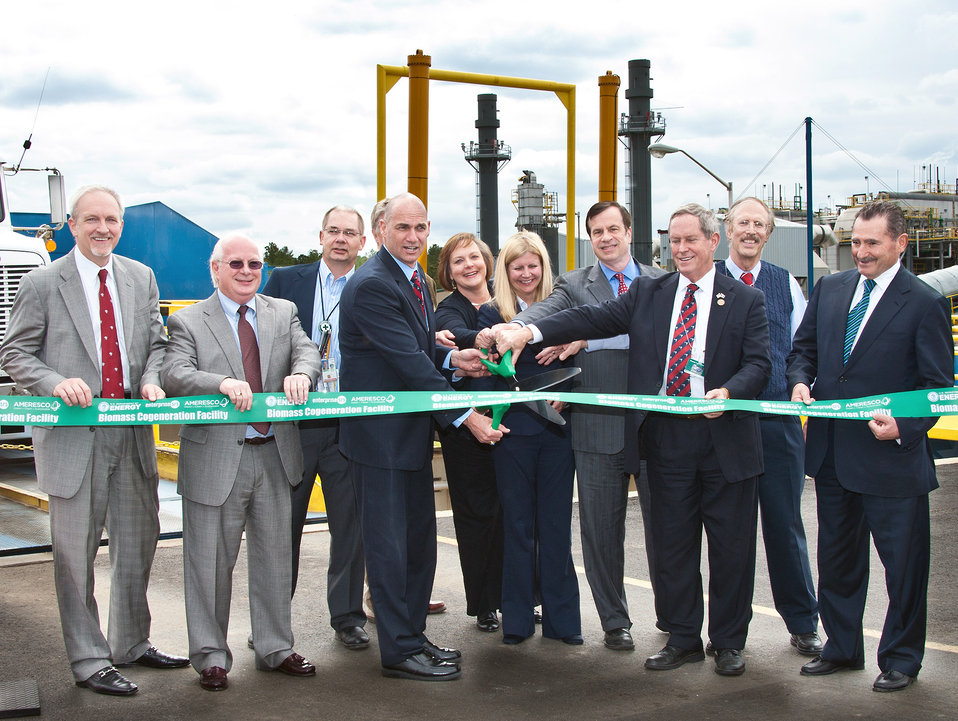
EM Celebrates Ribbon Cutting for New Biomass Plant at Savannah River Site

In 2009, DOE competitively awarded Ameresco Federal Solutions, Inc. a fixed-price renewable Energy Savings Performance Contract (ESPC) to finance, design, construct, operate, maintain and fuel a new biomass facility at SRS for 20-years. Under ESPCs, private companies finance, install, and maintain new energy and water-efficient equipment in federal facilities, with no up-front funding or extra costs incurred by the government or taxpayers.